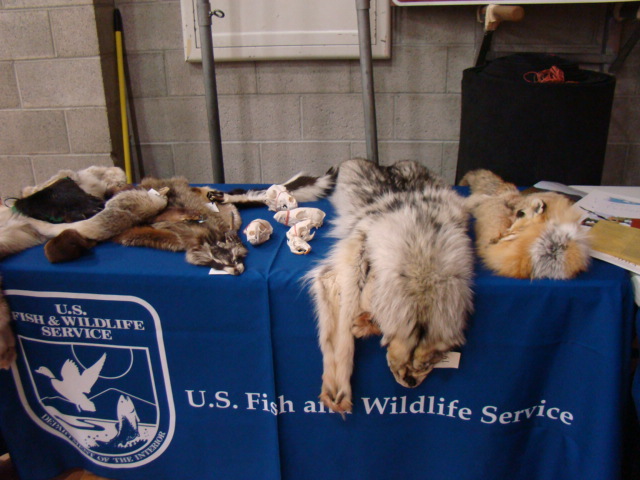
Great Falls STEM Expo

Every spring Benton Lake NWR participates in the Great Falls STEM (Science, Technology, Engineering, Math) Expo. We set up a booth complete with pictures, furs, skulls, animals, and even a duck banding station!